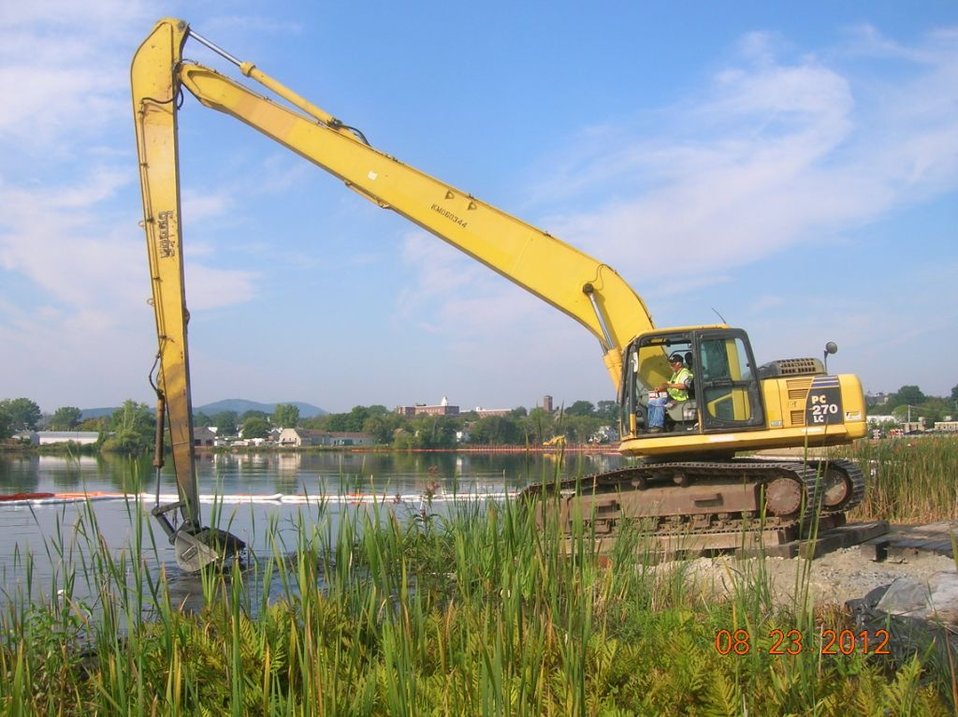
September 2012, Excavation continues in Silver Lake, Pittsfield, MA

Silver Lake has a history of extensive contamination from historic discharges of PCBs and other chemicals in process water and wastewater from GE's operations.

PCBs have been detected in moderate to high amounts in the lake's sediment, bank soils and surface water. Earlier this month, work crews discovered an inactive, abandoned outfall pipe during work in the northeastern area of the lake. That week alone, about 822 cubic yards of contaminated material including coal ash and misc fill was removed. Sediment removed from below the water table was stained black, coated with oil, and gave off a localized hydrocarbon odor.

Air monitoring is taking place as well as dust and airborne PCB monitoring.